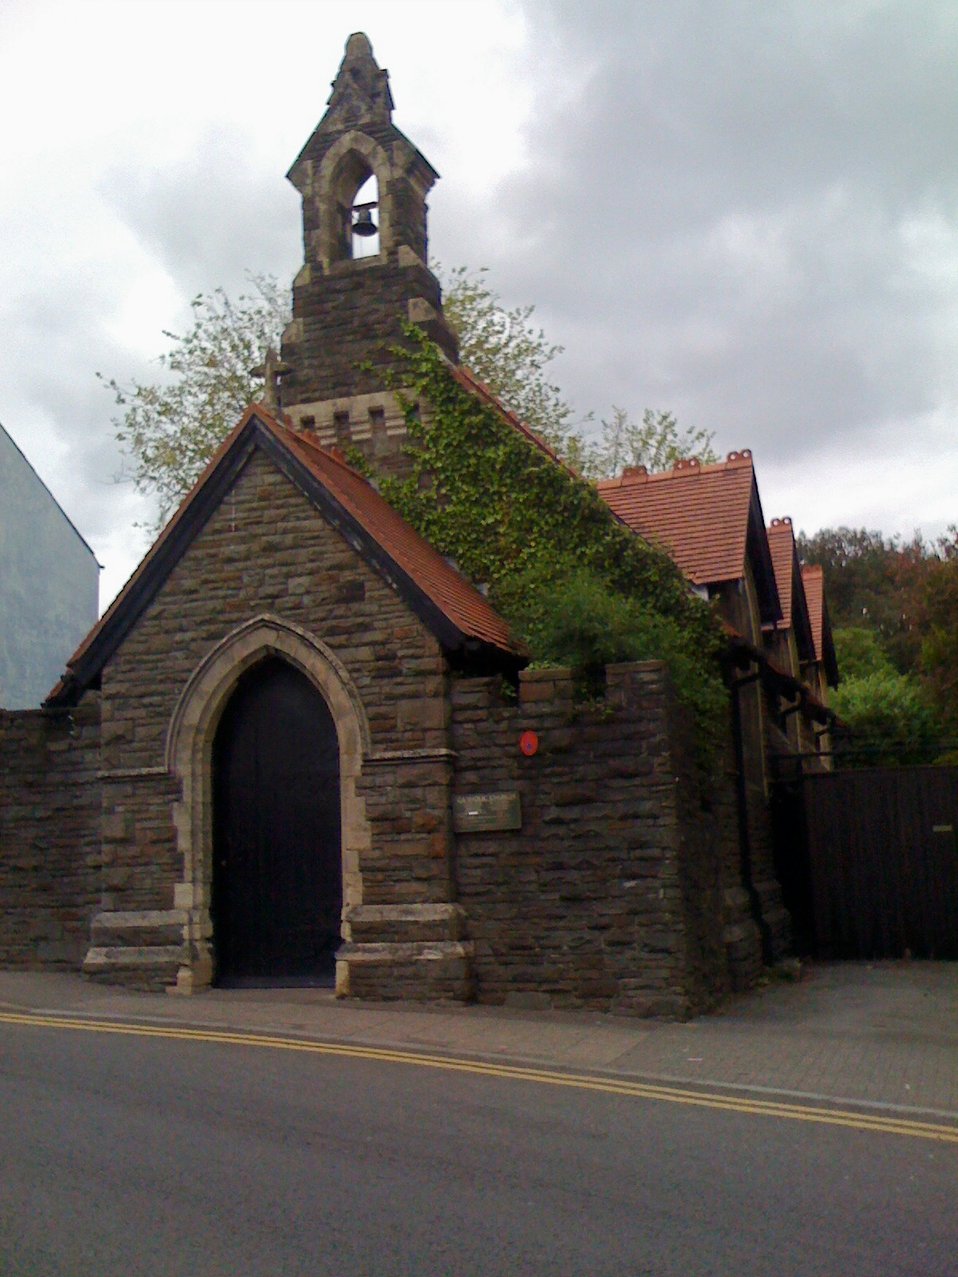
Caerleon-Catholic Church
Category:Pictures of Newport